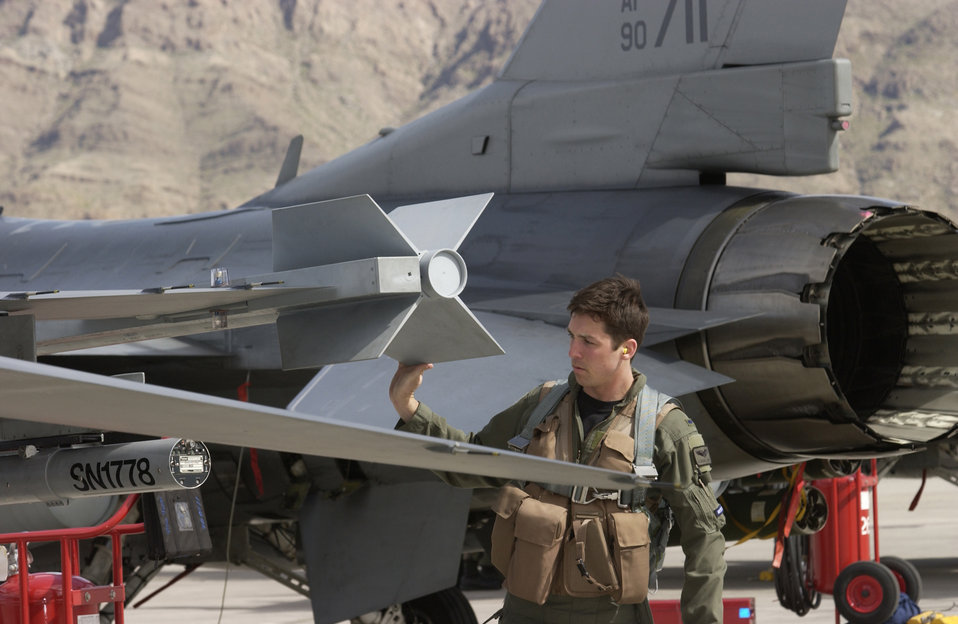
Air Warriors fly high

NELLIS AIR FORCE BASE, Nev. -- First Lt. Aleksas Justys performs a pre-flight inspection on his F-16 Fighting Falcon before a mission here March 23. He is assigned to the 18th Fighter Squadron at Eielson Air Force Base, Alaska. Airmen from Eielson are here to participate in Air Warrior, an air-to-ground exercise which provides close-air support to Soldiers training at the U.S. Army National Training Center at Fort Irwin, Calif.